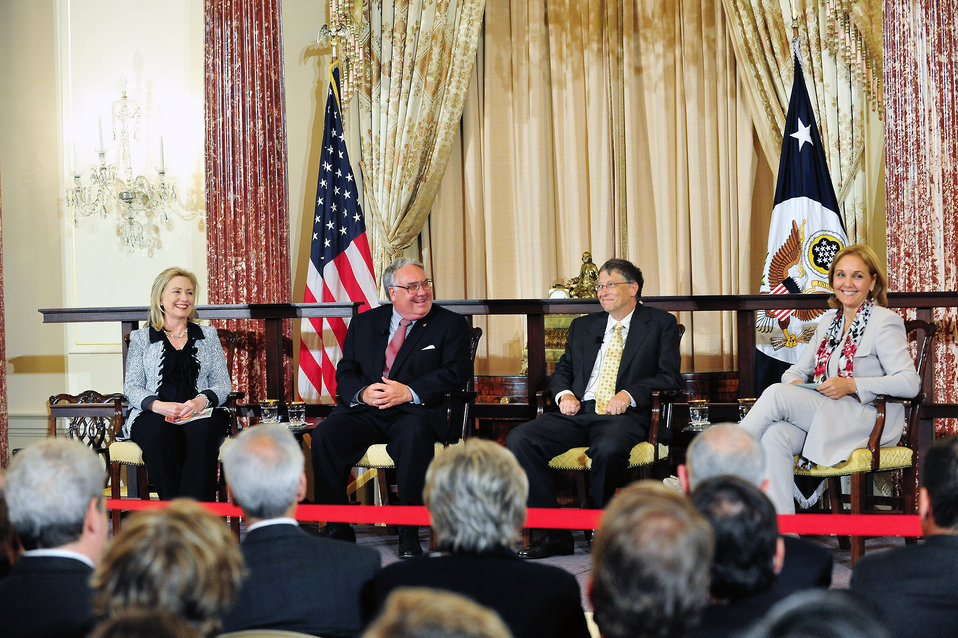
Secretary Clinton Participates in a Conversation With Awardees Howard Buffett, Bill Gates, and WFP Executive Director Josette Sheeran

U.S. Secretary of State Hillary Rodham Clinton participates in a conversation with the World Food Program’s 2011 George McGovern Leadership Awardees Howard Buffett, center left; and Bill Gates, center right; and World Food Program Executive Director Josette Sheeran, right; at the U.S. Department of State in Washington, D.C., on October 24, 2011.